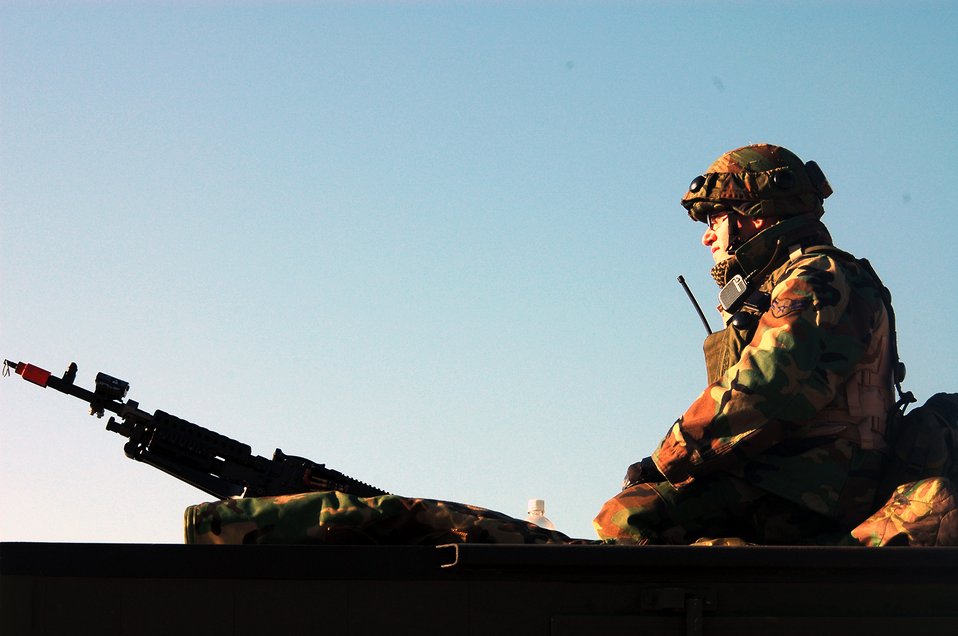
Eagle Flag preps Airmen for combat

Airman 1st Class Kelly Gallahan watches over an entry control point with an M-4 machine gun Oct. 15 as part of operations for Air Force Exercise Eagle Flag 07-1 at Naval Air Engineering Station Lakehurst, N.J. More than 400 Airmen participated in the exercise as they prepare for upcoming deployments. Airman Gallahan is a security forces journeyman from the 817th Contingency Response Group at McGuire Air Force Base, N.J.